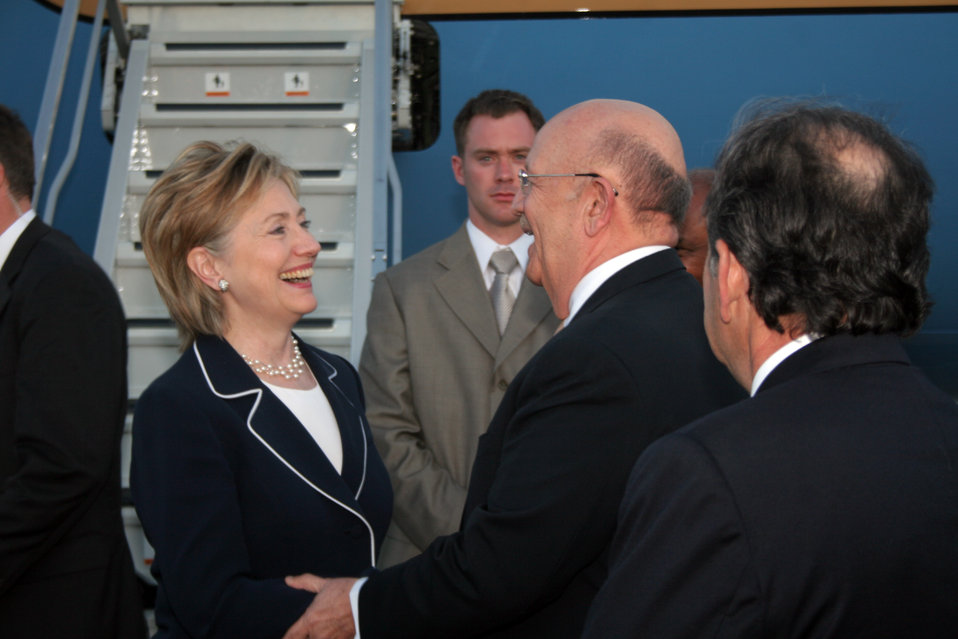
Secretary Clinton Arrives in Dominican Republic

U.S. Secretary of State, Hillary Rodham Clinton with Dominican Republic Foreign minister, Carlos Morales Troncoso upon arrival at Santo Domingo, Dominican Republic April 16, 2009.